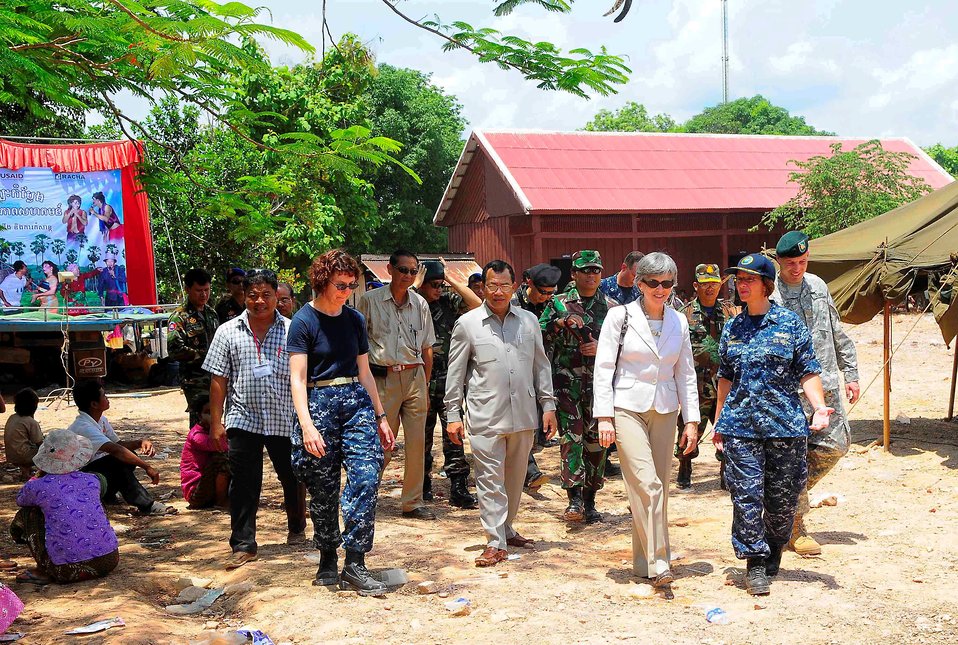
PP2010 Commander, Capt. Franchetti, Ambassador Rodley, and Cambodian Government Official Tour a Medical Civic Action Program

The commander of Pacific Partnership 2010, Capt. Lisa M. Franchetti, U.S. Ambassador to Cambodia Carol Rodley, and a Cambodian government official tour a medical civic action program in Rattanakiri, Cambodia, in support of Pacific Partnership 2010, on June 18, 2010.